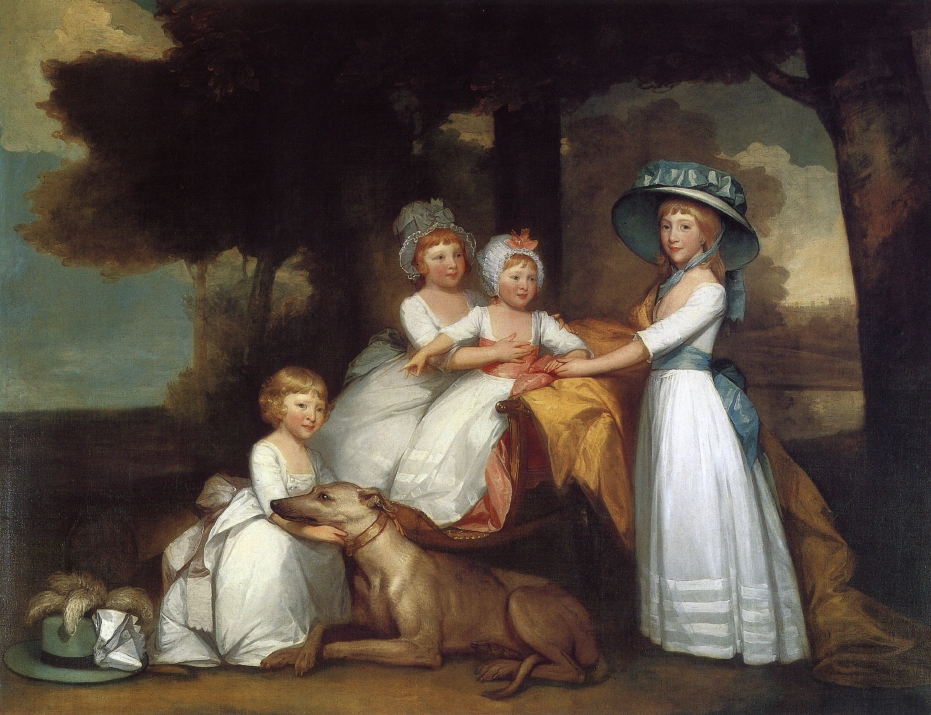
The Children of the Second Duke of Northumberland by Gilbert Stuart 1787